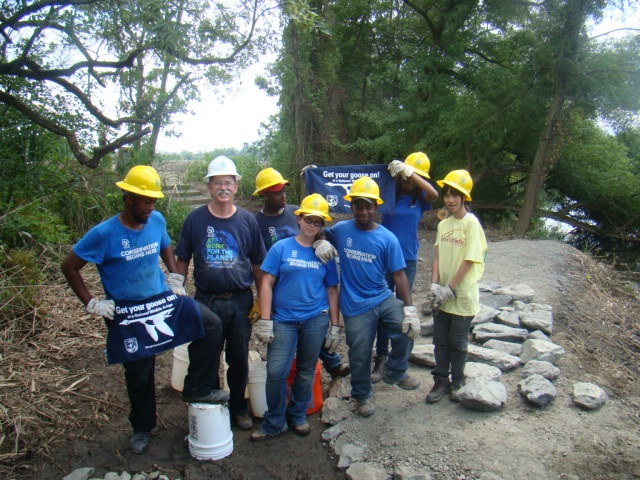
Get Your Goose On!

Student Conservation Association crew working hard building a path for the fishing site.